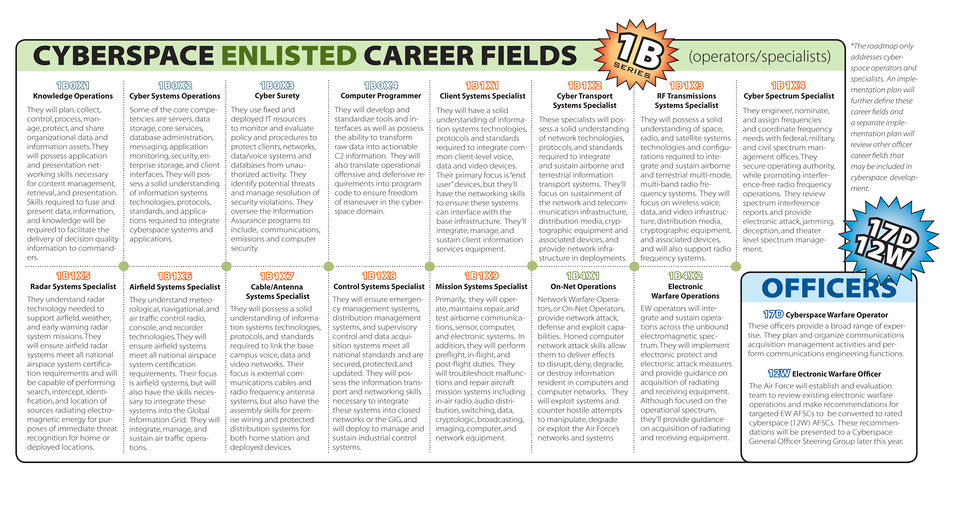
Cyberspace career fields, training paths, badge proposed

This illustration shows the proposed 15 new cyberspace enlisted career fields along with the officer specialties.